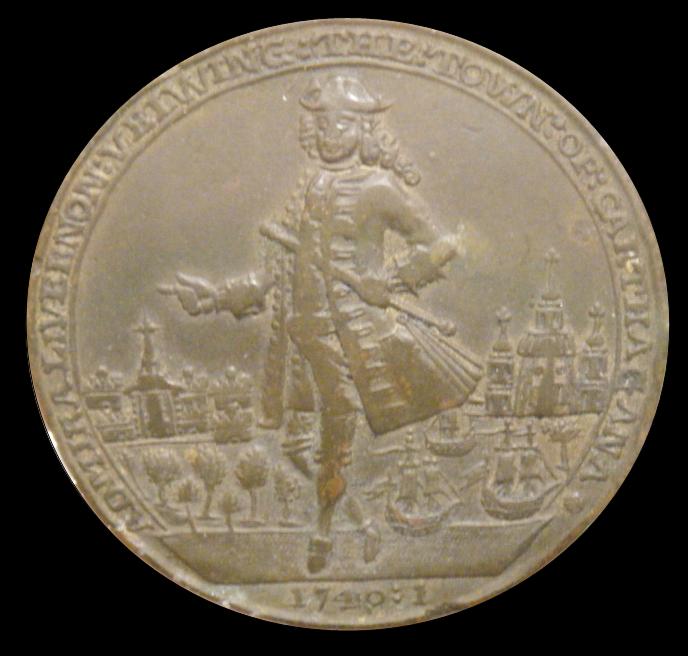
Español: Medalla conmemorativa inglesa de la 'toma' de Cartagena de Indias por parte del almirante Eduardo Vernon durante la Guerra del Asiento o de la Oreja de Jenkins. En ella aparece Vernon, sosteniendo un bastón de mando mientras señala la ciudad, con la flota inglesa a sus espaldas. La leyenda dice 'Admiral Vernon Vhinning the Town of Carthagana', es decir, 'El Almirante Vernon Tomando la villa de Cartagena'. Tras la abrumadora derrota sufrida por Vernon en Cartagena, las medallas fueron retiradas, aunque se conservaron algunas. Museo Naval de Madrid. English medal commemorating the 'taking' of Cartagena de Indias by admiral Edward Vernon during the Jenkin's Ear War. The medal depicts admiral Vernon holding a command stick and finger pointing the city, with his fleet behind him. The medal says 'Admiral Vernon Vhinning the Town of Carthagana'. After the crushing defeat suffered by the English fleet in Cartagena, the medals were retired, but some were saved. Naval Museum of Madrid.